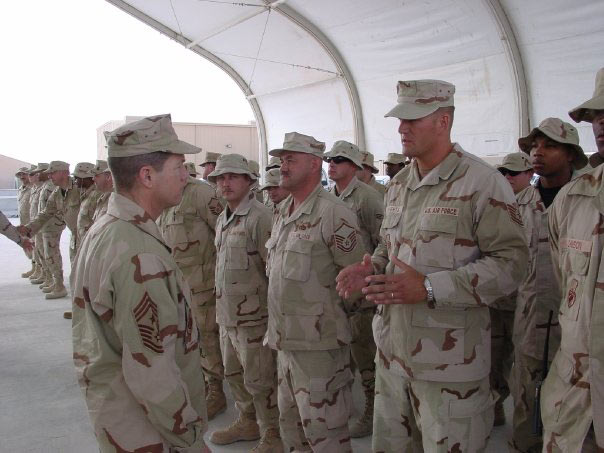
Craig Knights-Northeast Region

Originally from Lincoln, Maine, Craig Knights first joined the U.S. Air Force in 1989 and served until he retired in 2009. While serving his country Knights was honored with several well-deserved awards including Air Force Commendation Medal with 2 oak leaf clusters, an Air Force Achievement Medal, a National Defense Service Medal, a Southwest Asia Service Medal, Global War on Terrorism Service Medal and the Korean Defense Service Medal. Knights is currently a Facilities Operations Specialist at the U.S. Fish and Wildlife Service’s Maine Fisheries Complex in East Orland and Ellsworth, Maine. When asked about his time spent serving his country Knights proudly responds, “It was an absolute honor and privilege to be able to serve with such a high caliber of professional men and women during my 20 years of service. The same level of teamwork and professionalism is needed and provided at the U.S. Fish and Wildlife Service to ensure that our mission gets accomplished.”